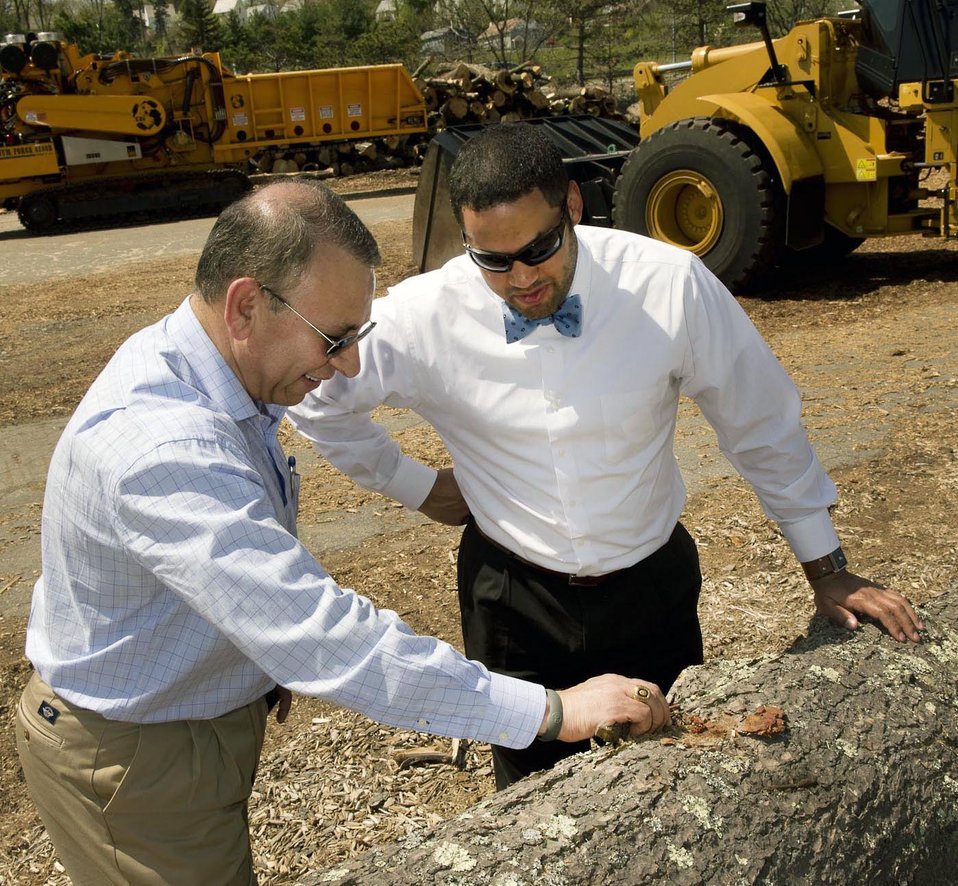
U.S. Department of Agriculture (USDA) Animal Plant Health Inspection Service (APHIS) Plant Protection and Quarantine (PPQ) Deputy Administrator Osama El-Lissy and USDA Marketing and Regulatory Programs (MRP) Deputy Under Secretary Gary Woordward inspect Asian Longhorned Beetle (ALB) damage in the Boston, MA, on Monday, May 12, 2014.